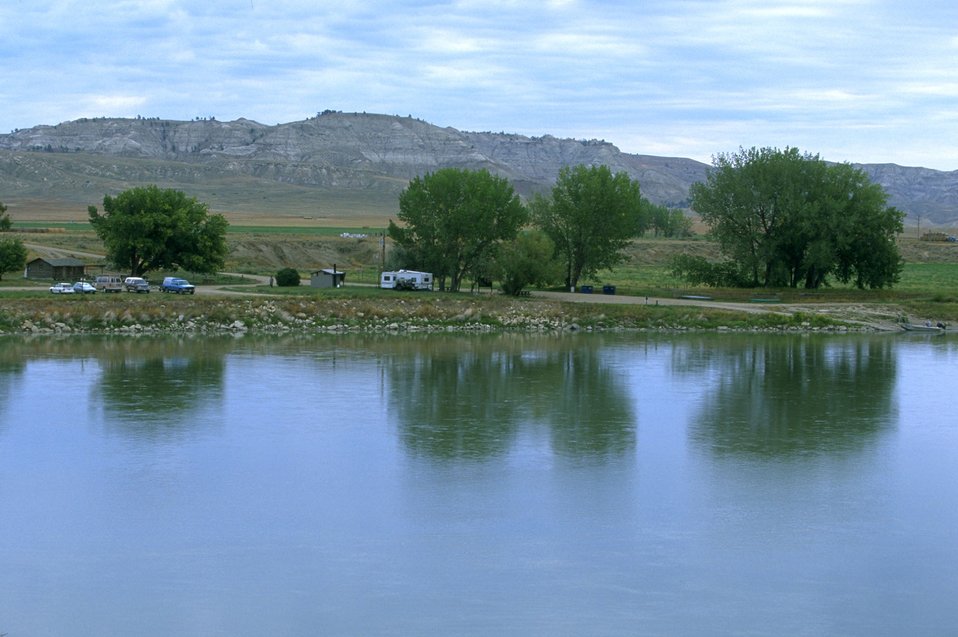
Judith Landing along Upper Missouri National Wild and Scenic River